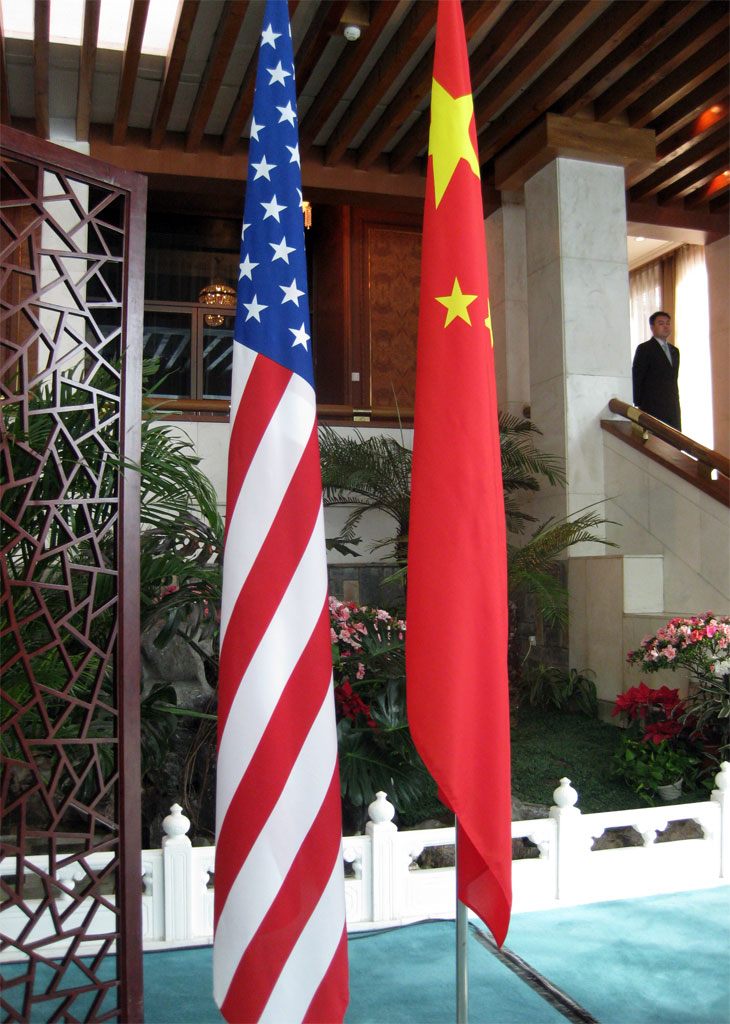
Diaoyutai State Guesthouse Flags

Behind the Scenes: U.S. and China flags prior to a press conference by U.S. Secretary of State Hillary Rodham Clinton at the Diaoyutai State Guesthouse in Beijing, China February 20, 2009.